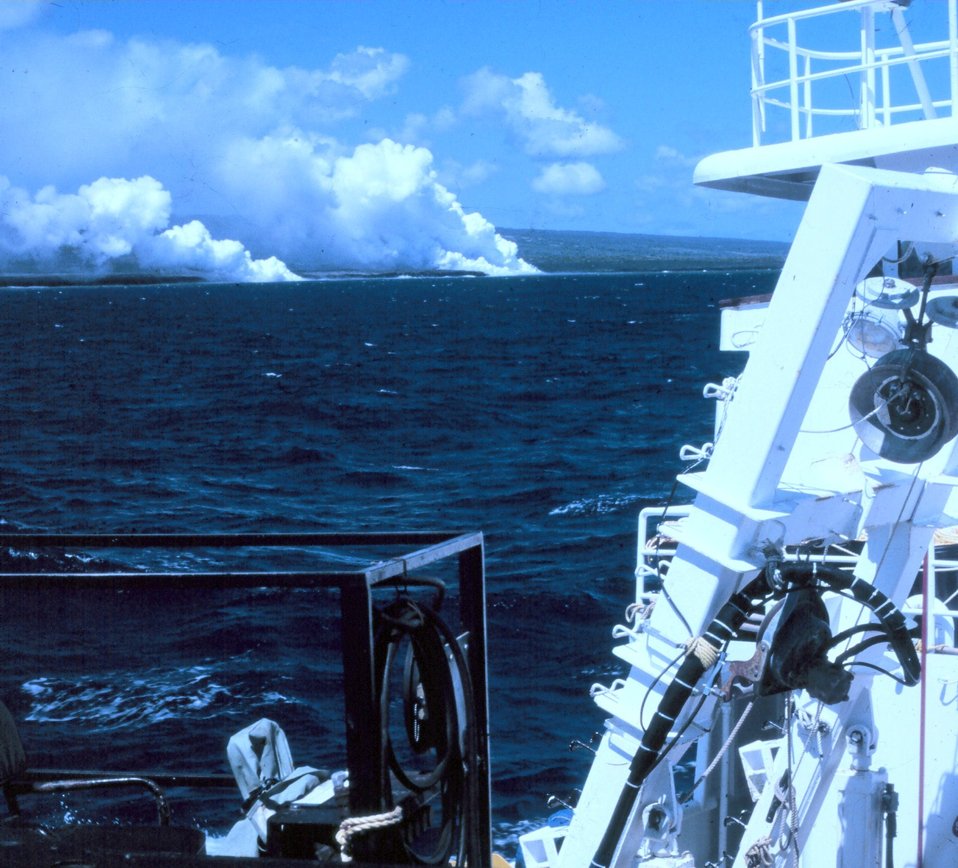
Steam formed by lava entering the sea